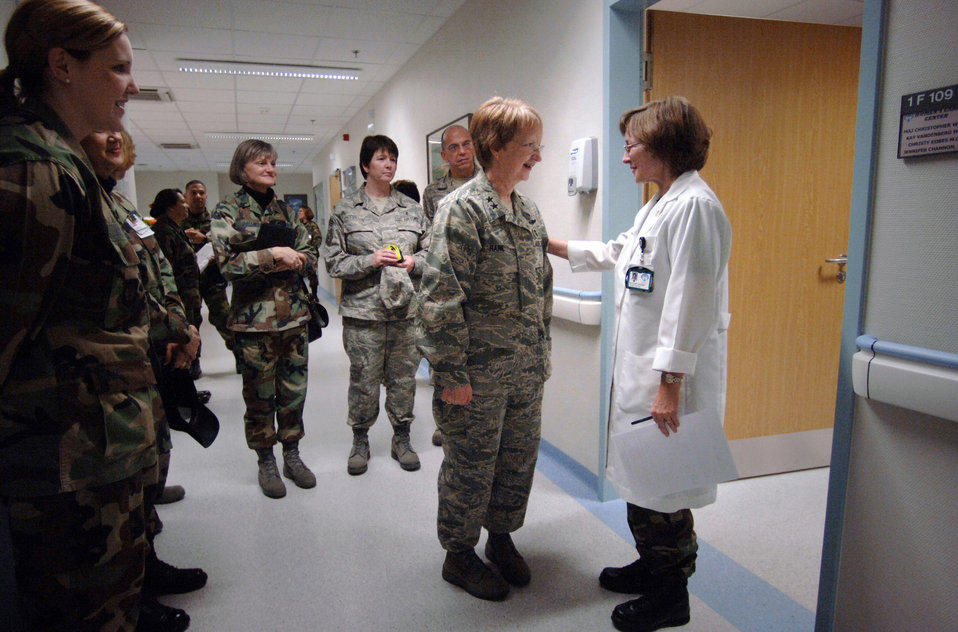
Assistant Air Force Surgeon General visits LRMC, Germany

While visiting staff and patients at Landstuhl Regional Medical Center, Germany, Dec. 12 Maj. Gen. Melissa A. Rank, Assistant Air Force Surgeon General, Medical Force Development and Nursing Services, is greeted in the Women's Care Center by Maj. Leslie Christopher, a women's health nurse practitioner. (U.S. Air Force photo/Master Sgt. Scott Wagers)

Among many of General Rank's asigned responsibilities is to influence policy and enhancement actions for more than 34,000 active-duty officer and enlisted medical personnel and creates and evaluates nursing policies and programs for 19,000 active-duty, Guard and Reserve nursing personnel.

General Rank is assigned to the Office of the Surgeon General at Bolling Air Force Base, D.C.
Photo by Master Sgt. Scott Wagers /